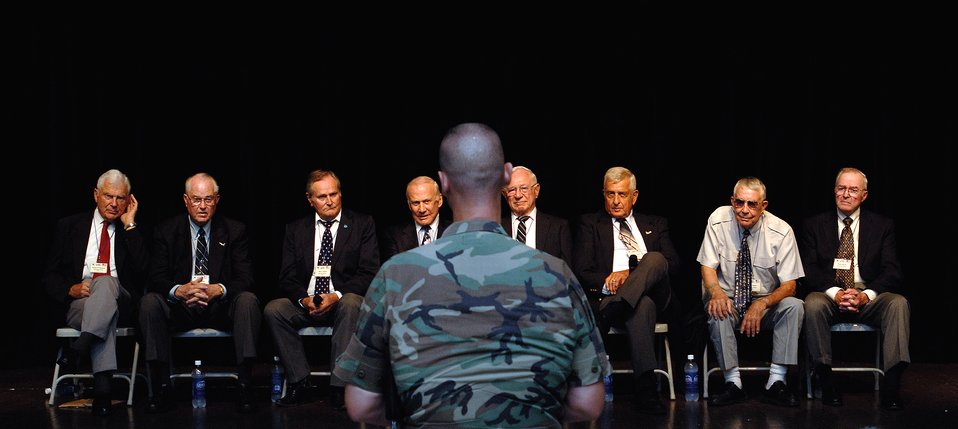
Korean War veterans give sage advice to Airmen

Retired Air Force members Lt. Gen. Charles G. Cleveland (from left), Maj. Gen. Carl G. Schneider, Col. Ralph Gibson, Col. Buzz Aldrin, Col. Pete Carpenter, Col. Ken Shealy, Col. Harold Fischer and Col. Robert Moxley, answer questions during an Air Force Call with nearly 150 Airmen from Yongsan Army Garrison, South Korea.